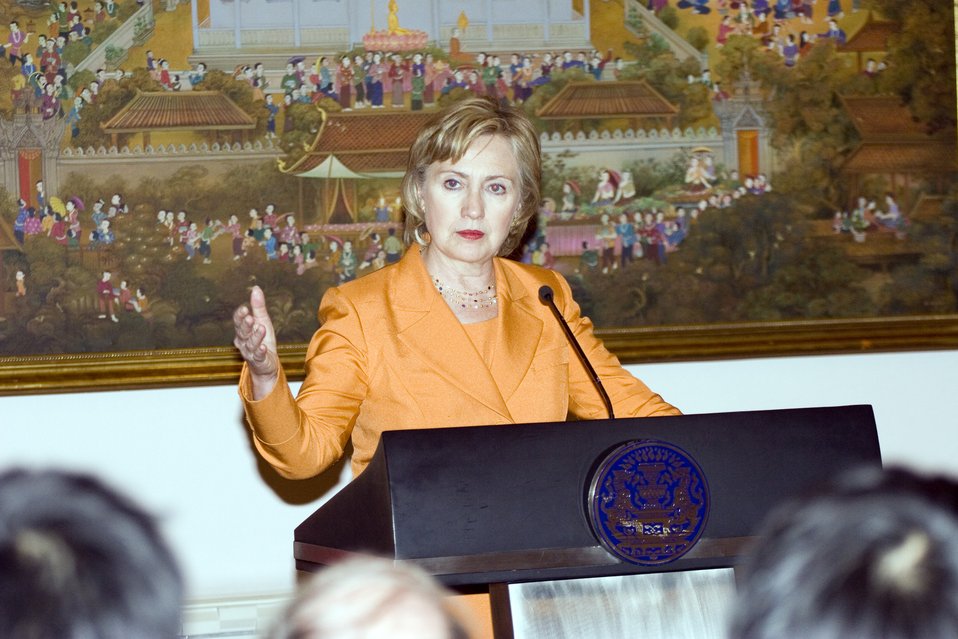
U.S.-Thailand Bilateral Meeting

U.S. Secretary of State Hillary Rodham Clinton answers questions from the press following the bilateral meeting at Government House in Bangkok, Thailand July 21, 2009.